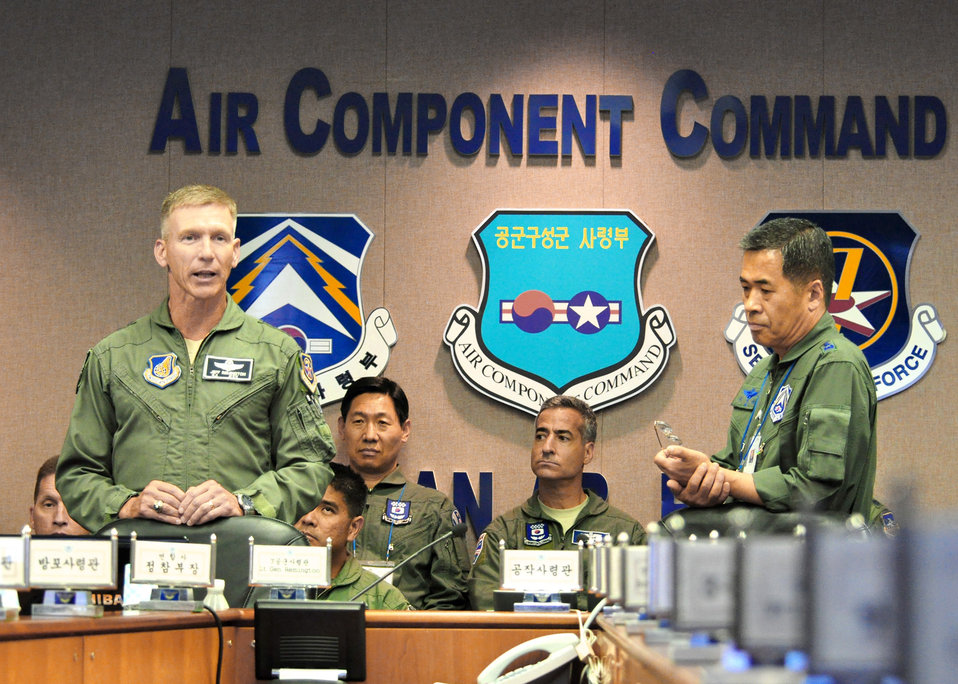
Military leaders discuss past, future ops at Air Boss Conference

Lt. Gen. Jeffrey A. Remington and his deputy, Korean Air Force Lt. Gen. Lee Yeong Man gave opening remarks during the annual Air Boss Conference June 15, 2011 at Osan Air Base, South Korea. General Remington is the Air Component Command commander, and General Yeong Man is the Air Component Command deputy commander.